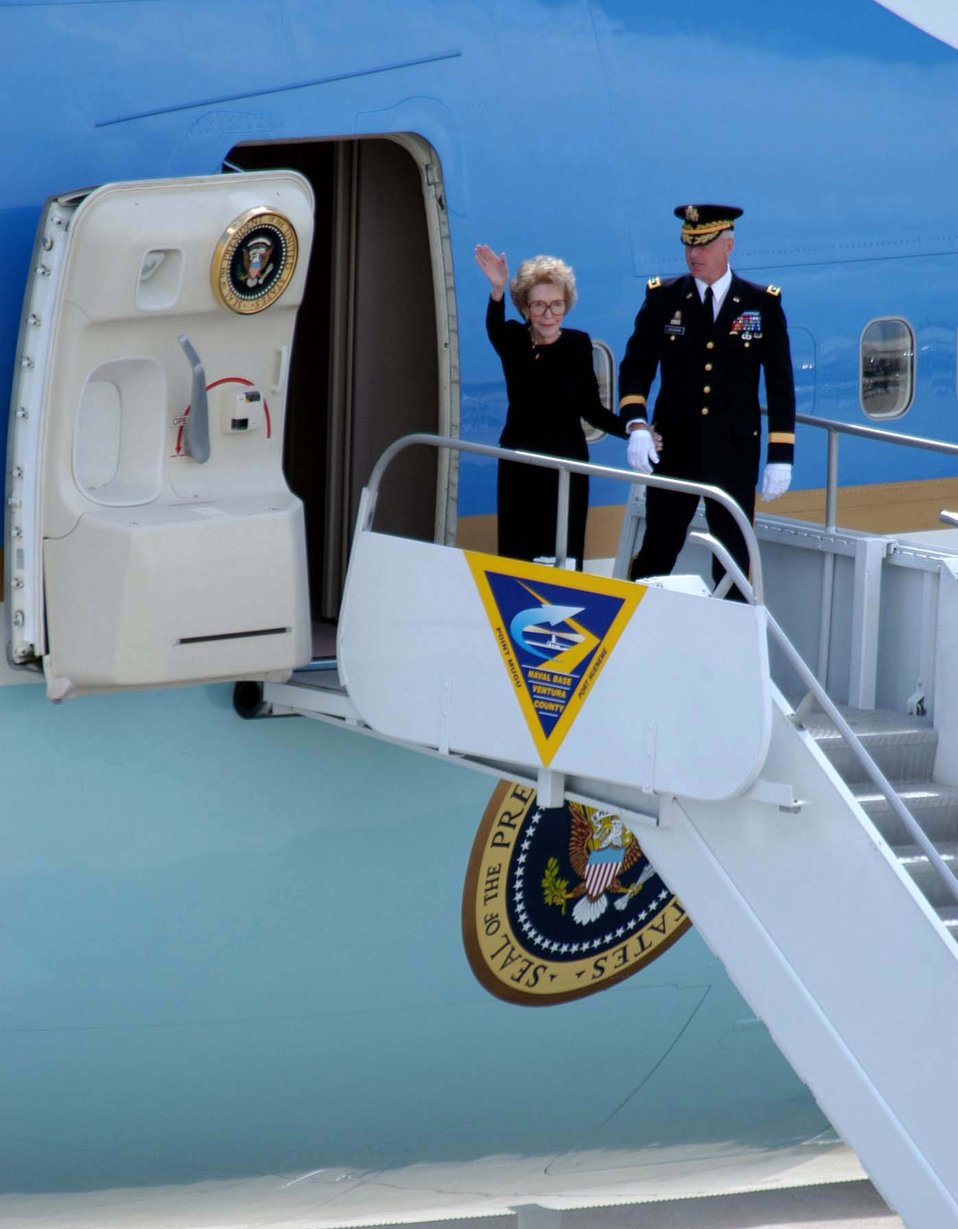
Reagan makes first, last flight

NAVAL BASE VENTURA COUNTY, Calif. -- Army Maj. Gen. Galen B. Jackman escorts former first lady Nancy Reagan as former President Ronald Reagan's casket is placed aboard an Air Force VC-25 here June 9. President Reagan's body was flown to Andrews Air Force Base, Md., en route to Washington to lie in state in the U.S. Capitol Rotunda until June 11. General Jackman is commander of the Military District of Washington.